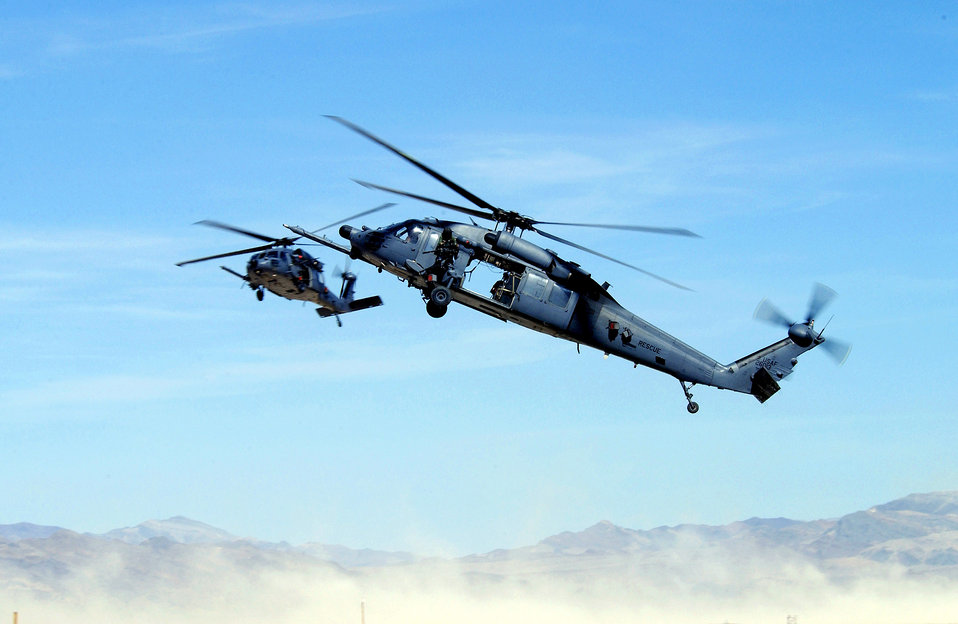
Rescue mission

INDIAN SPRINGS AIR FORCE AUXILIARY FIELD, Nev. -- Two HH-60 Pave Hawks maneuver into position to